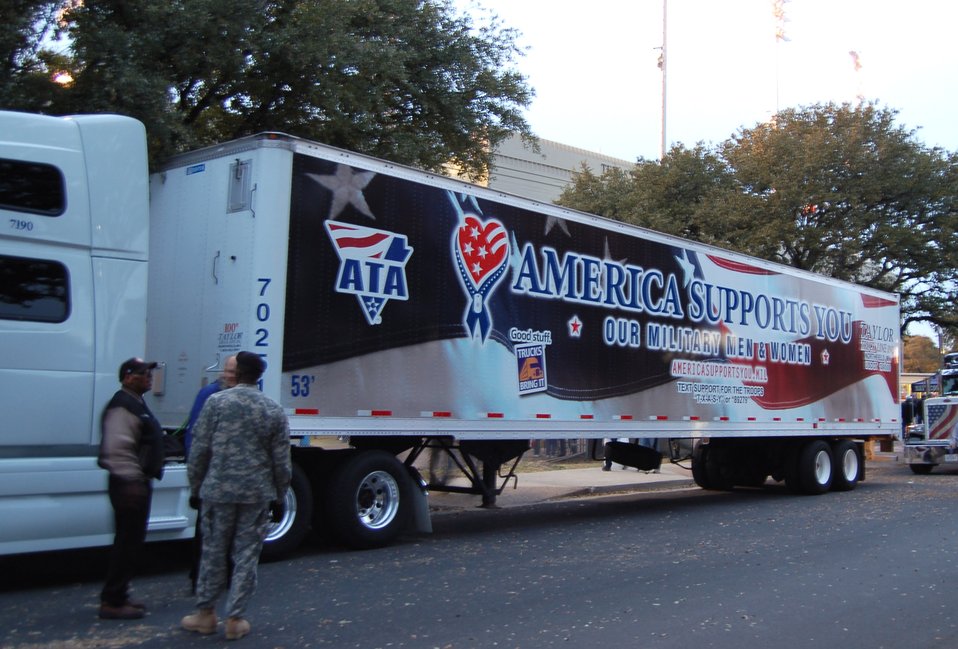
Bell Helicopter Armed Forces Bowl pays tribute to servicemembers

A truck featuring the America Supports You logo is parked outside Amon G. Carter Stadium in Fort Worth, Texas, before the start of the Bell Helicopter Armed Forces Bowl Saturday, Dec. 23. Y3K Grafix, Inc., a partner in the America Supports You program, rolled out its first